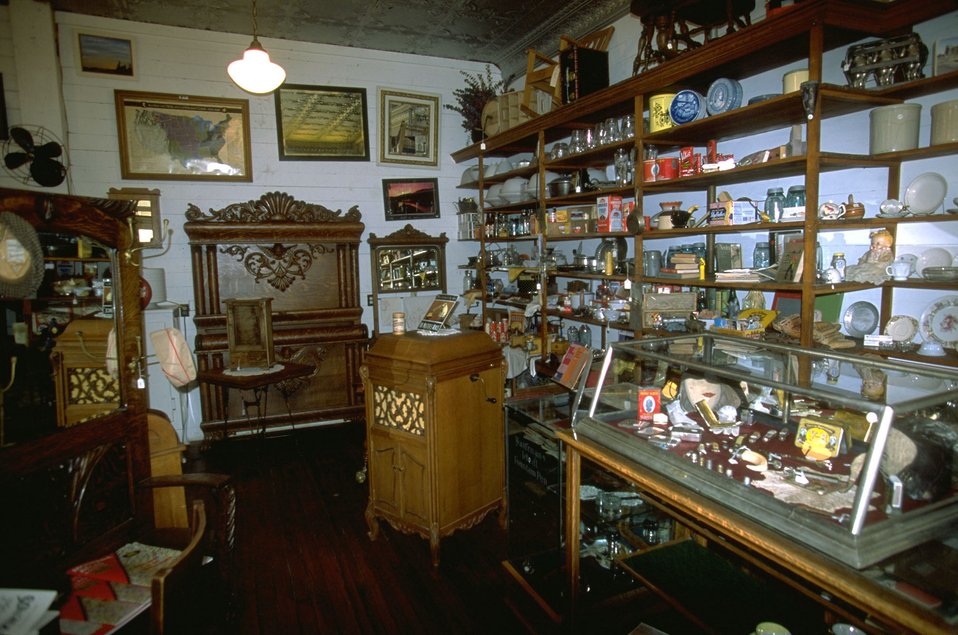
Virgelle Merchantile near Loma